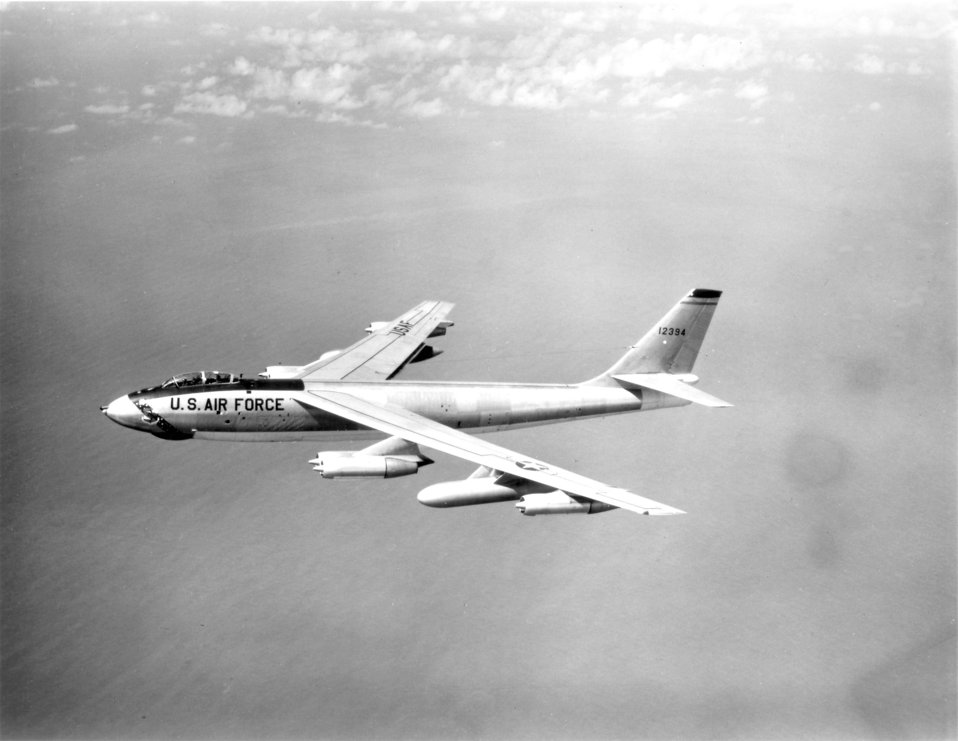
B-47 Stratojet

1950's -- An overall view of a Boeing B-47 Stratojet aircraft in flight.